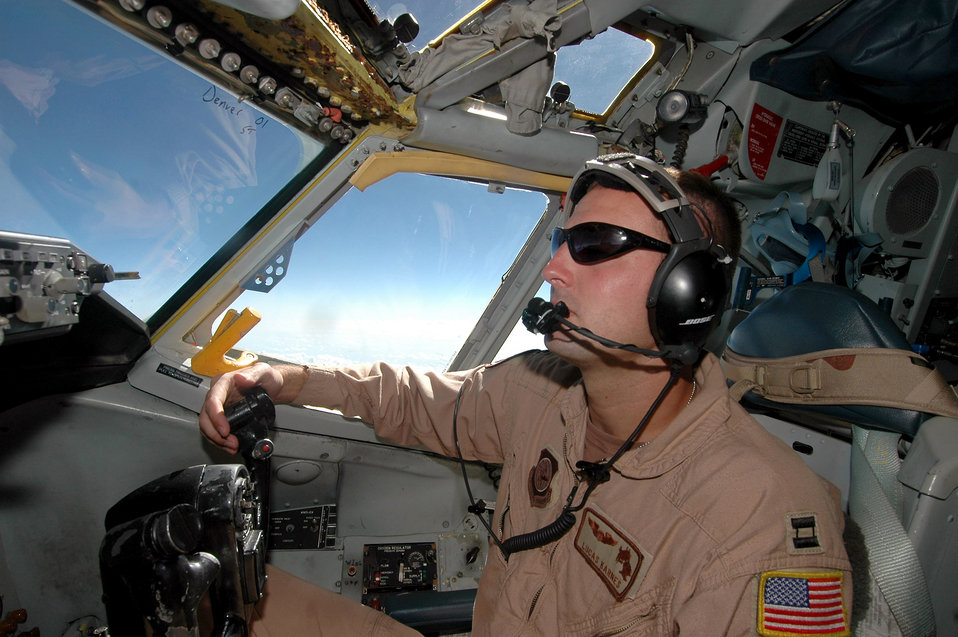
Fueling the fight

Capt. Lucas Karnes flies his plane during a refueling operation over the Indian Ocean. KC-135 Stratotankers refuel B-52 Stratofortressess that fly into Afghan airspace providing close air support to U.S. and coalition forces on the ground. Captain Karnes is a KC-135 pilot with the 28th Expeditionary Air Refueling Squadron.